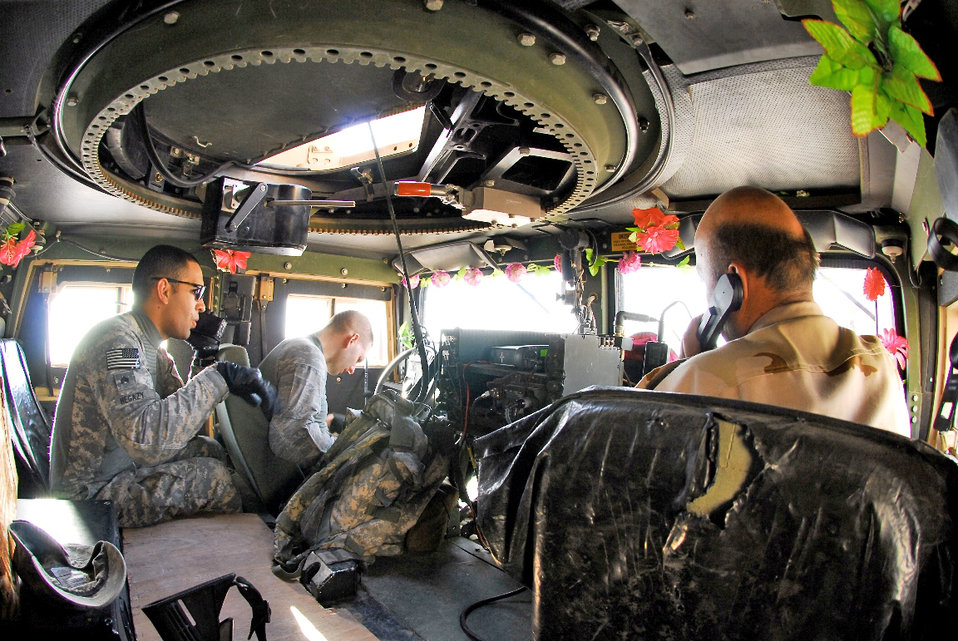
Air Force commander 'ecstatic' at Iraqi coordination

Maj. Lee Dewald drives a Humvee during a training exercise between Iraqi army and air force units at Camp Wessam, Iraq, Sept. 12, 2009. Major Dewald is an air liaison officer with the 84th Expeditionary Air Support Operation Squadron.